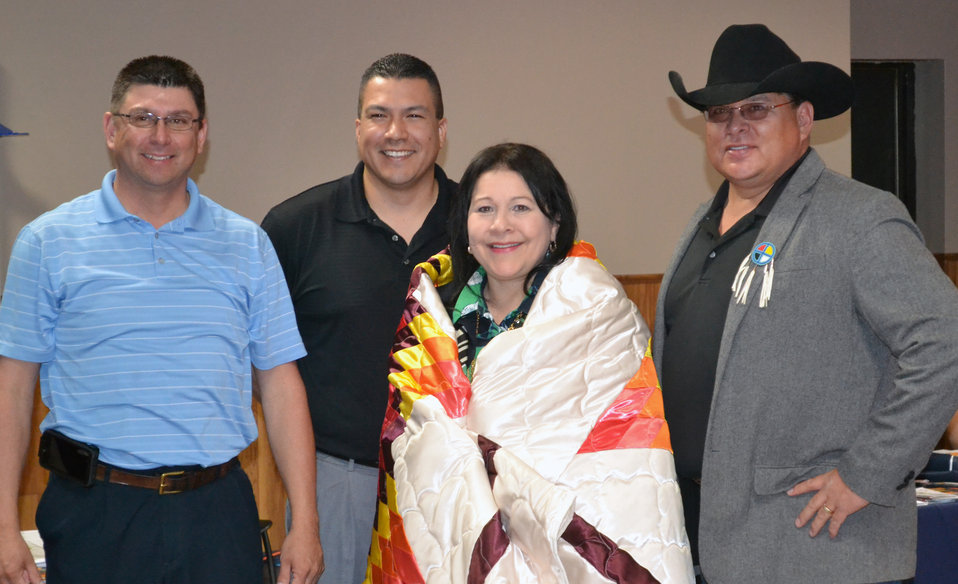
U.S. Department of Agriculture (USDA) Rural Development (RD) Rural Housing Service (RUS) Administrator Tammye Travino visits South Dakota to co-chair a StrikeForce meeting in Sissetion, SD. Travino attended a Housing Fair and visited homes and facilities financed by USDA's RD as part of National Homeownership Month on Monday, Jun. 3, 2013.